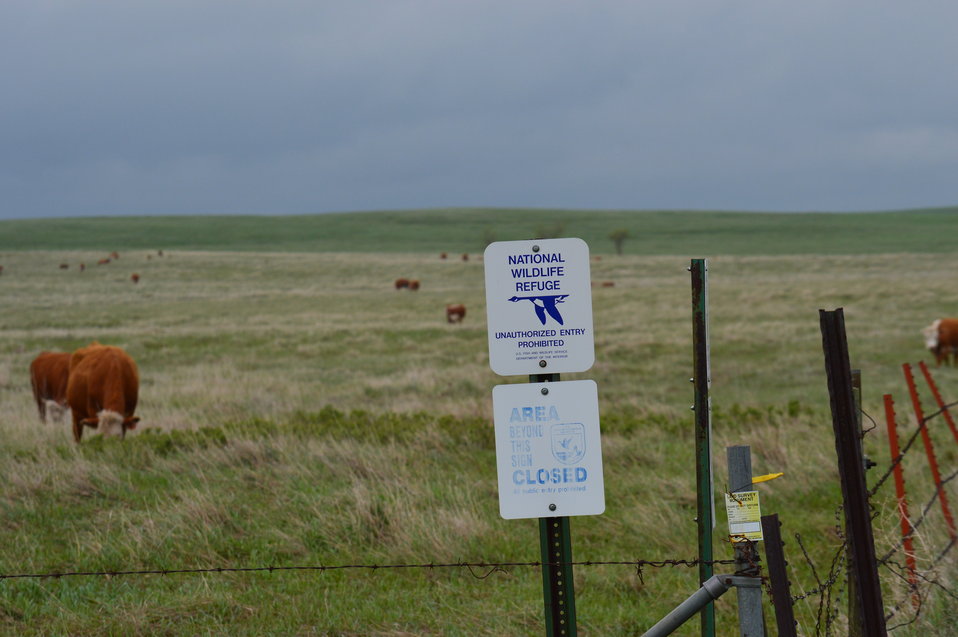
NWR sign and cattle

Scenery and wildlife at Lake Ilo National Wildlife Refuge in North Dakota